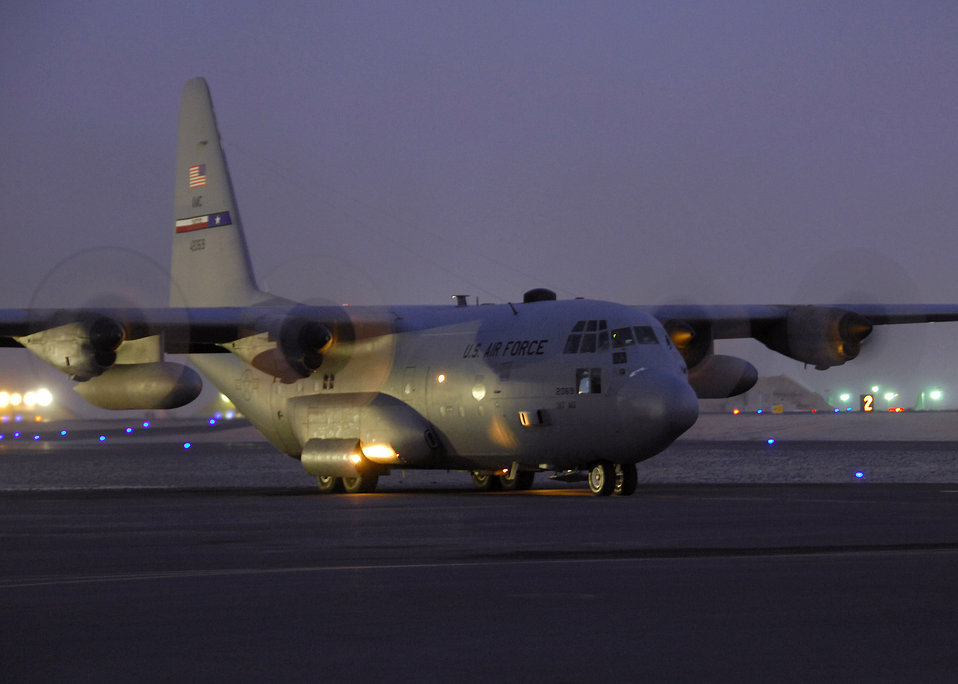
Dec. 28 airpower summary: C-130s transport cargo

A C-130 Hercules prepares for a nighttime departure sortie mission en route to Iraq. C-130s are prime transporters of cargo, passengers and troop resupply and support heavy airlift missions throughout Southwest Asia.